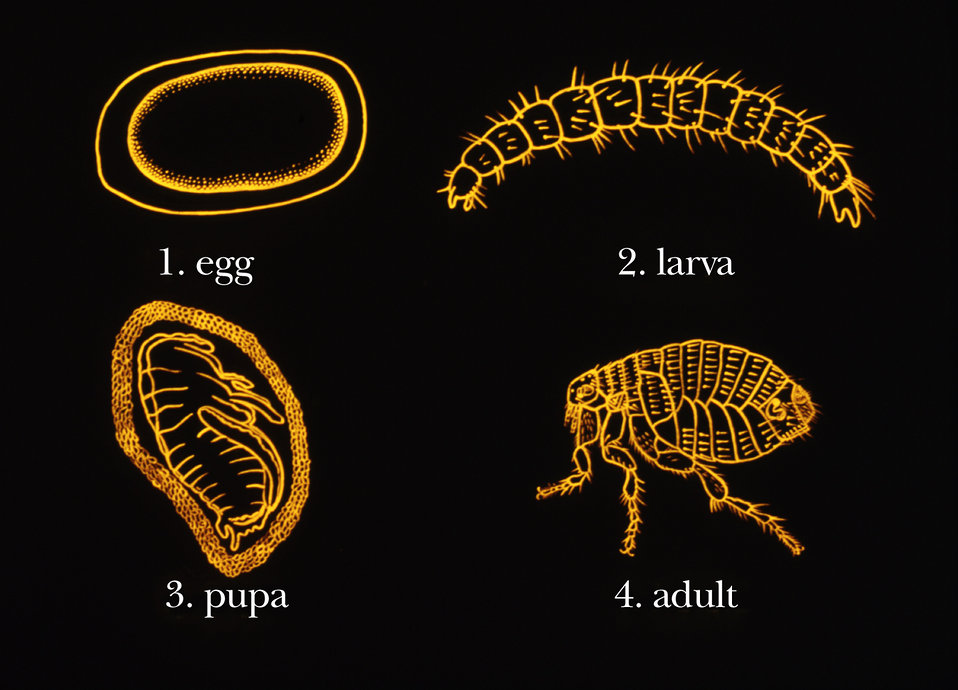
This illustration depicts the morphologic changes experienced by a flea during its life cycle, from an egg to an adult insect.